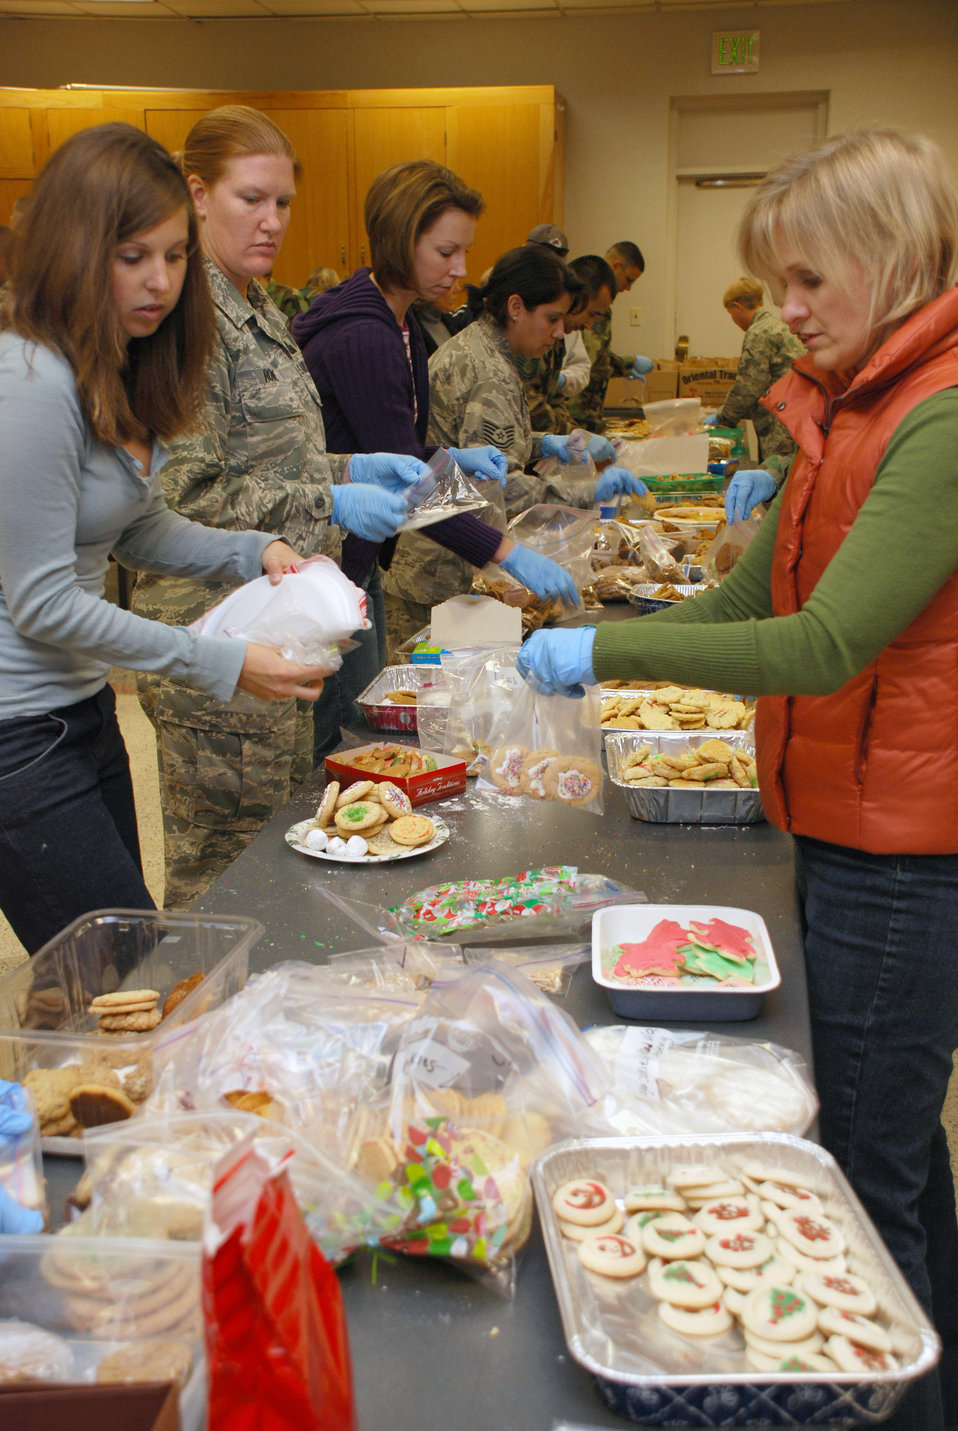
Bakers, baggers deliver sweet treats to dormitory Airmen

Volunteers bag cookies for dormitory Airmen in support of the Cookies for the Troops drive Dec. 16 at Peterson Air Force Base, Colo. More than 6,600 cookies were donated by Peterson and Schriever AFB military and family members for nearly 400 Airmen living in the Peterson dormitories.